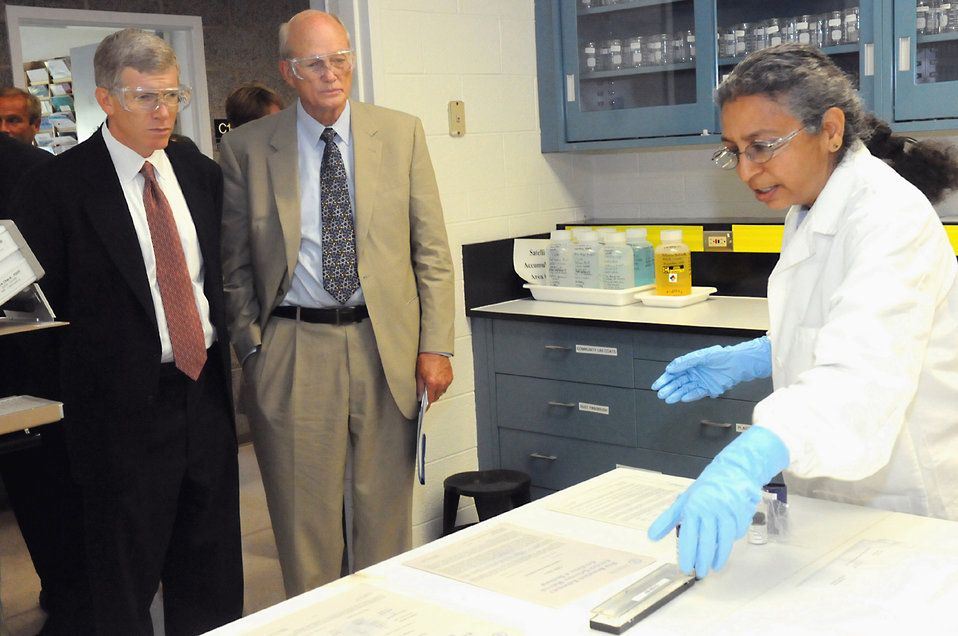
Deputy Secretary Poneman and Bill Brinkman visit the New Brunswick Laboratory

Deputy Secretary of Energy Daniel Poneman and Bill Brinkman, Director of the Office of Science, listen to Usha Narayanan of New Brunswick Laboratory